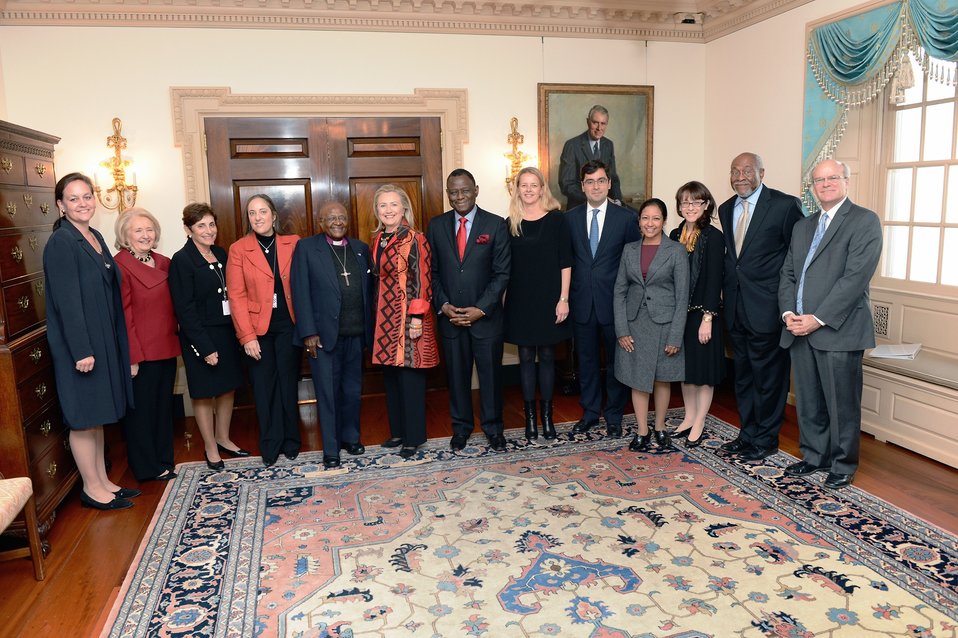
Secretary Clinton Meets With Archbishop Tutu

U.S. Secretary of State Hillary Rodham Clinton meets with Archbishop Desmond Tutu at the U.S. Department of State in Washington, D.C., October 10, 2012.